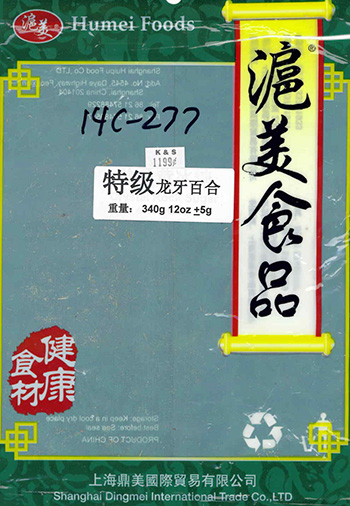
RECALLED – Dried Lily

February 4, 2014 – Product Recall – Humei Trading Inc. Issues Alert on Undeclared Sulfites in 'Dried Lily' .